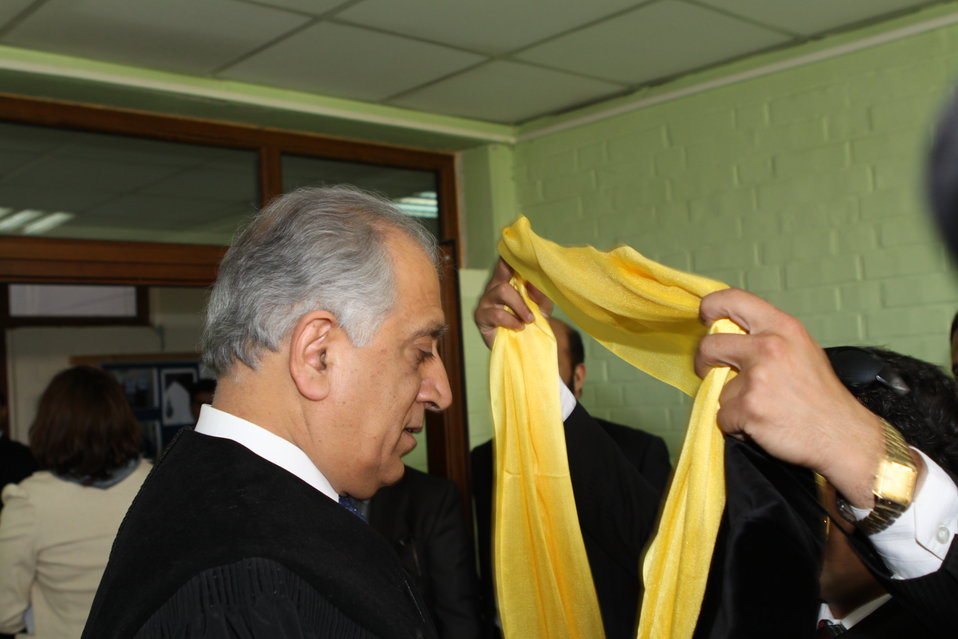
100526 AUAF Graduation 075